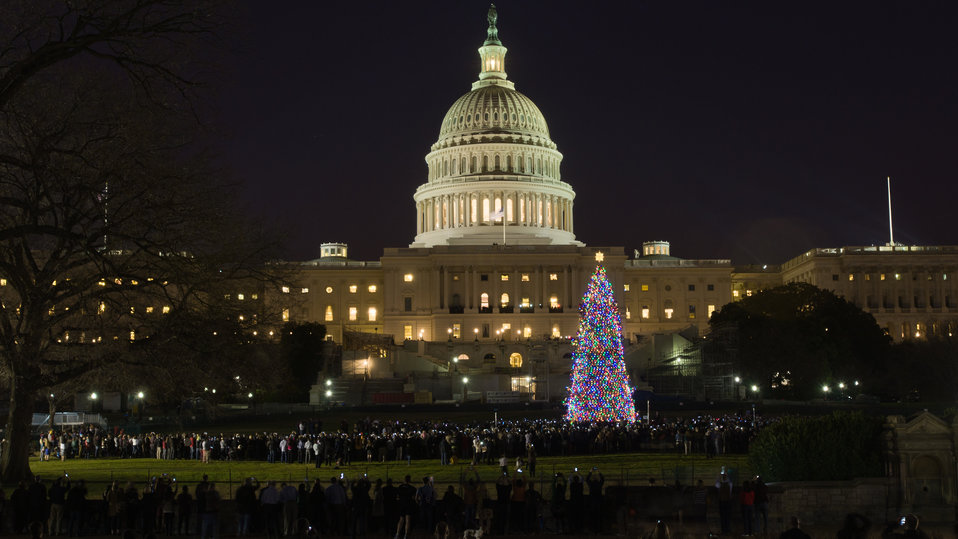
The lights of the 2012 U.S. Capitol Christmas Tree from the Blanco Ranger District of the White River National Forest near Meeker, Colorado; and decorated with hand-made ornaments, was switched on by Colorado Springs high school student Ryan Shuster and House Speaker John Boehner, on Tuesday, Dec. 4, 2012. Since November, the tree visited dozens of cities across the country as it made its way here on Nov.26, 2012. The 73-foot Englemann spruce traveled from the White River National Forest in Colorado. Other representatives as well as Natural Resources and Environment Under Secretary Harris Sherman spoke during the festivities.